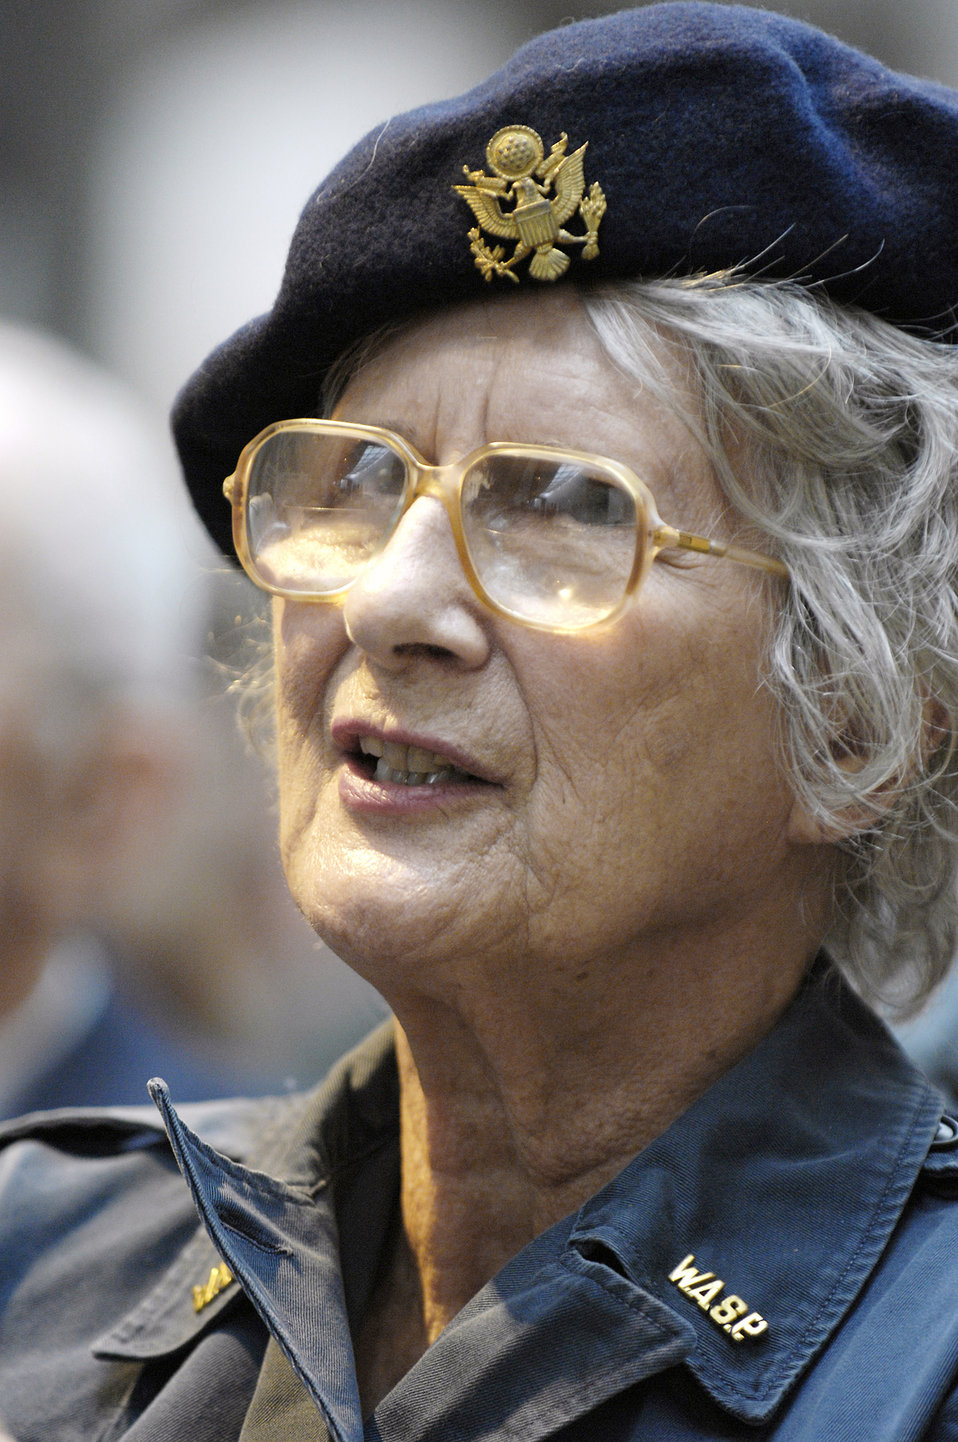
We served, too

Joan Lemley listens to a speaker while attending the